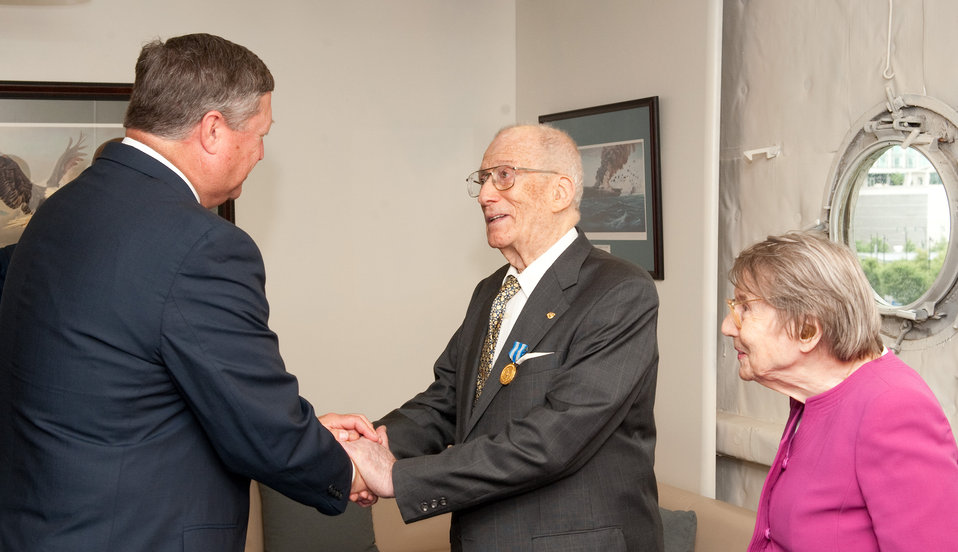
Air Force Week New York City Public Service Award

The Honorable Michael Donley (left), Secretary of the Air Force, presented Mr. Chester Burger (center), with his wife Elizabeth (right), the Air Force Distinguished Public Service Award to Mr. Chester Burger for service as an Air Force advocate under the Public Affairs Advisory Group in New York City for more than 15 years, on Aug. 24, 2010; after the Air Force Week New York City proclamation ceremony in the USS Intrepid.